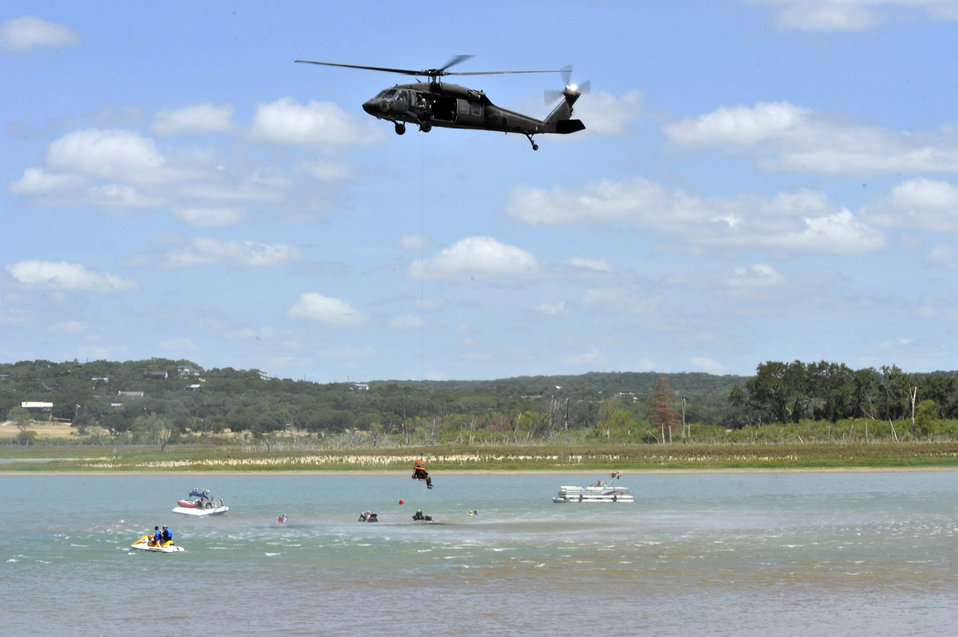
Air Guard flight crews undergo water survival training

A UH-60 Black Hawk from the 149th Aviation Regiment is maneuvered in to position during refresher aircrew water survival training at Canyon Lake near San Antonio. The aircraft and crew provided the water recovery portion of the refresher training conducted by the 149th Fighter Wing. Both units are part of the Texas National Guard assigned in San Antonio.